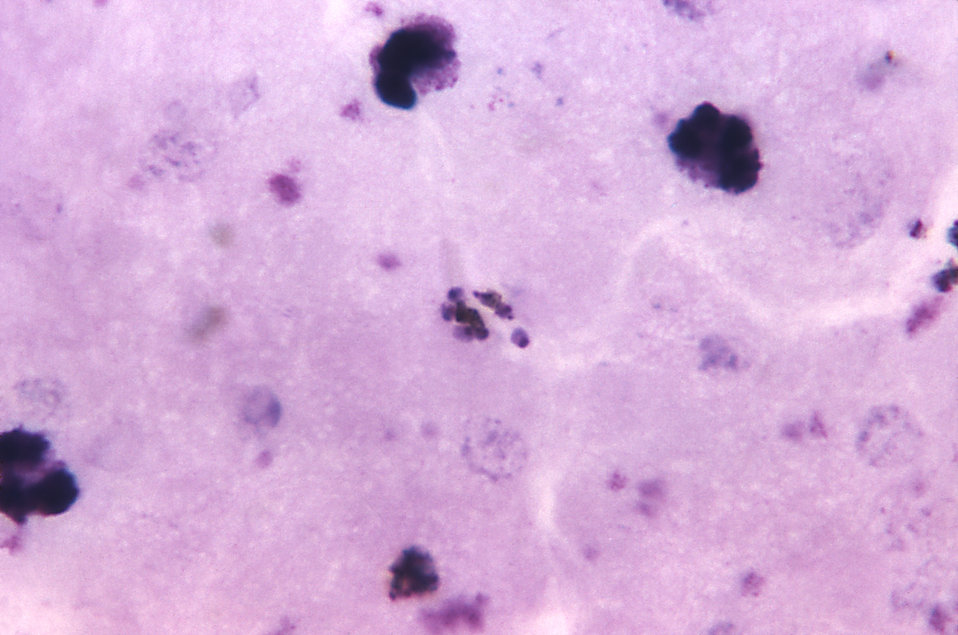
This thick film photomicrograph depicts a mature Plasmodium malariae schizont using Giemsa stain; Magnified 1125X.